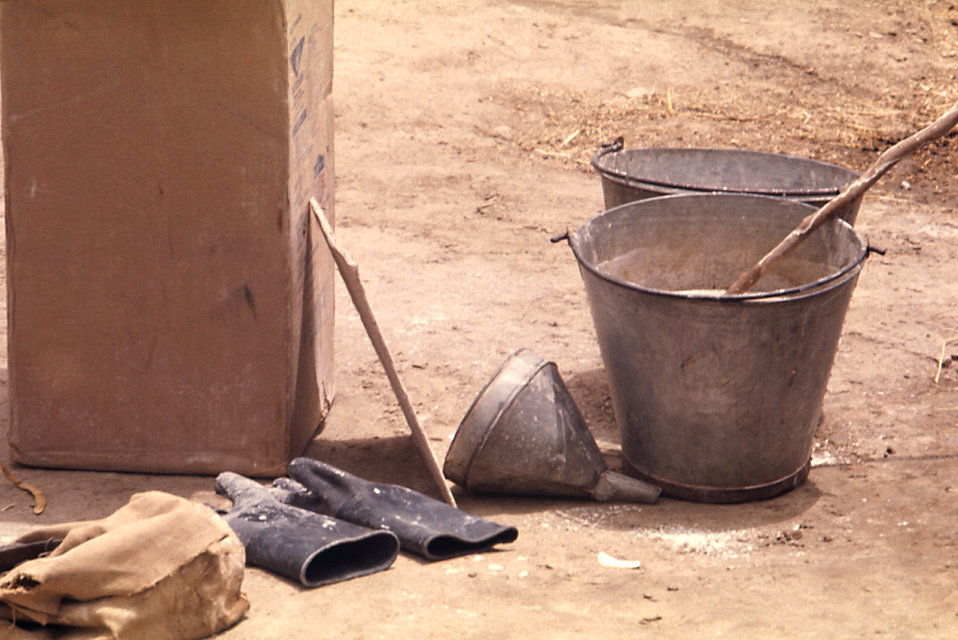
These were the tools used by the Pakistani malaria control team when they were mixing malathion powder with water for spraying.